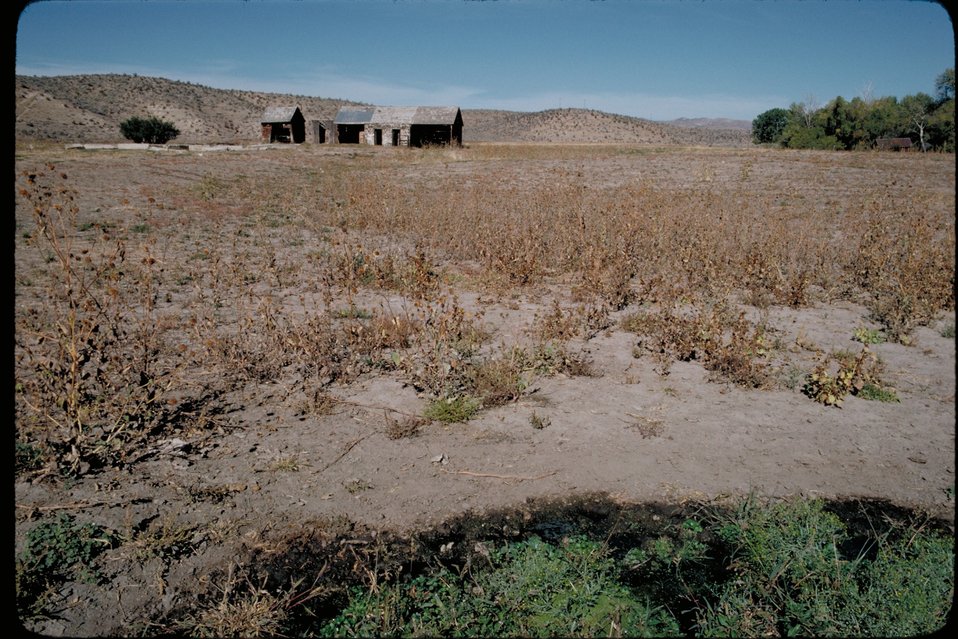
Oregon Trail Mayfield Stage Station Lower Snake River District